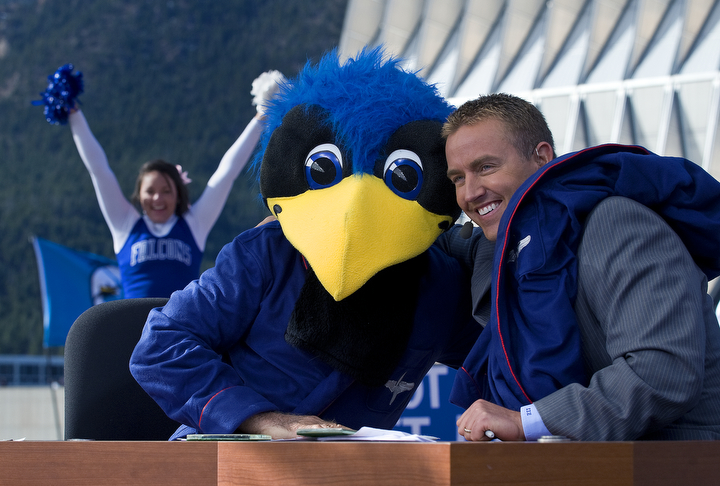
ESPN films 'College GameDay' from Academy

ESPN college football analyst Lee Corso wears the U.S. Air Force Academy's